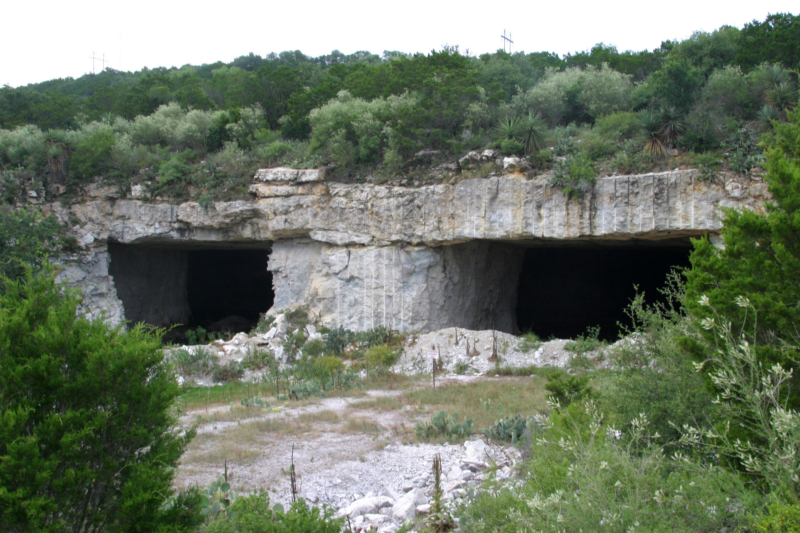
Huber Mine 2004

Important bat caves in Mexico.